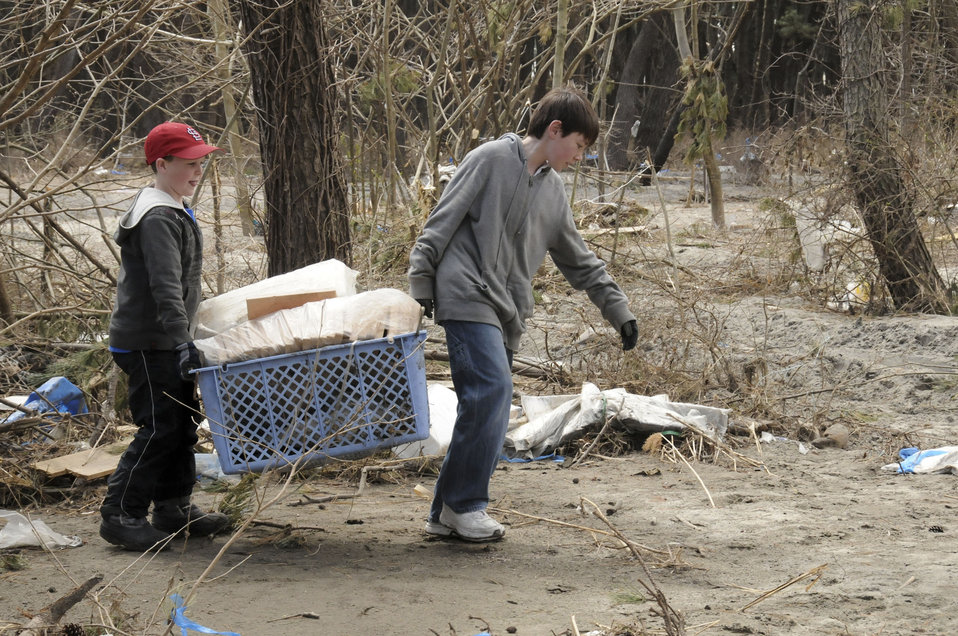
Children volunteer with Misawa Helps

Garrett Whitaker, 8, and Seth Rothstein, 12, carry a pile of trash out of the woods at a park April 12, 2011, in Hachinohe, Japan. Garrett is the son of Maj. Greg Whitaker, the 35th Communications Squadron commander. Seth is the son of Col. Michael Rothstein, the 35th Fighter Wing commander.